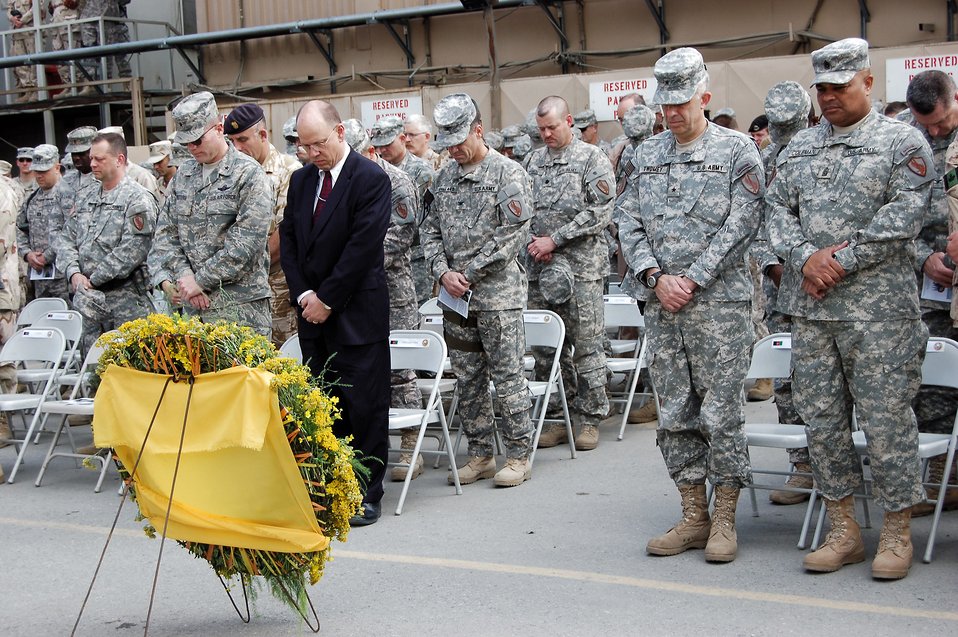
Deployed servicemembers honor fallen heroes

(Front row, left to right) Brig. Gen. Tod D. Wolters, Combined Security Transition Command-Afghanistan deputy commanding general, political-military affairs; Bruce Rogers, deputy assistant to the Afghan Ambassador; Army Brig. Gen. Andrew B. Twomey, CSTC-A deputy commanding general; and Command Sgt. Maj. Arthur L. Coleman, CSTC-A command sergeant major, participate in a Memorial Day ceremony May 26 at Camp Eggers in Kabul, Afghanistan. The Memorial Day service was dedicated to the remembrance of fallen servicemembers, particularly the 62 CSTC-A comrades who gave their lives in service to their country.